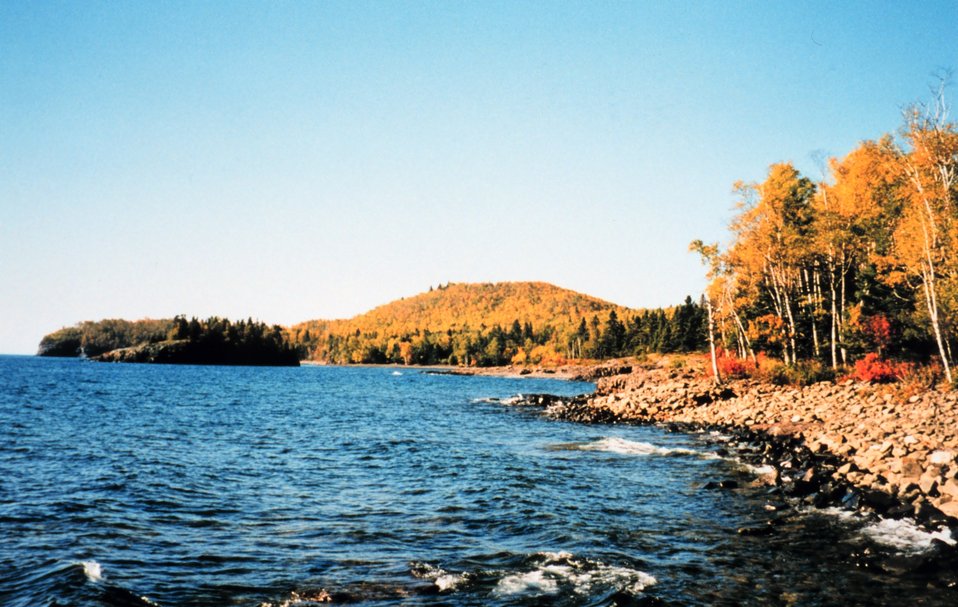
Houghton County